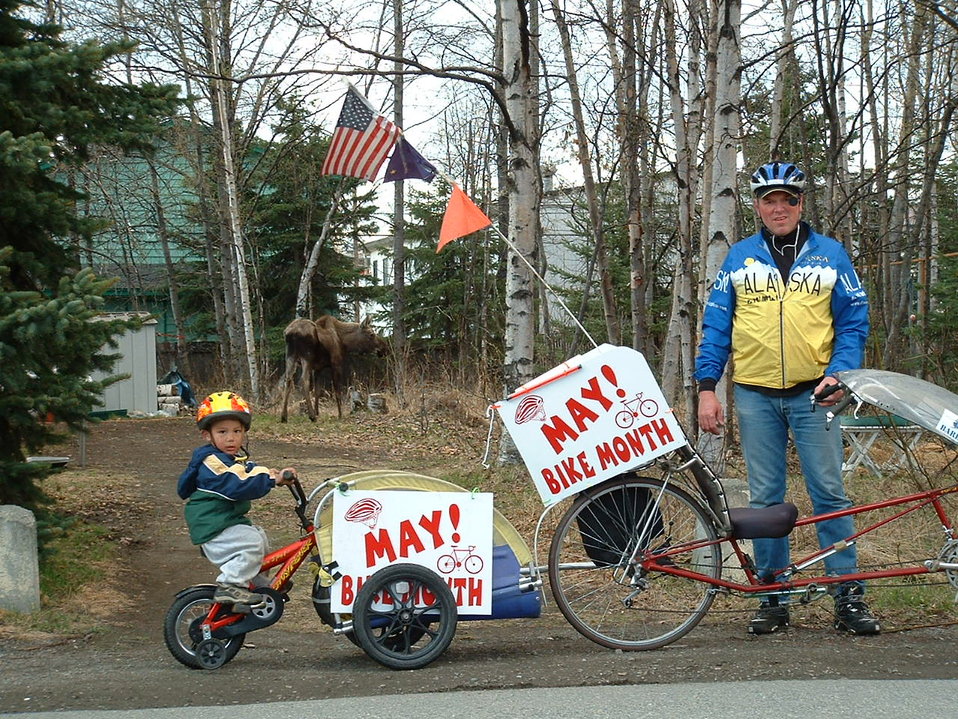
may bike month 007

Uploaded for Flickr member jimvorder.

My Grandson, Kenneth and I sharing our love of cycling with the neighborhood moose in Anchorage, AK .